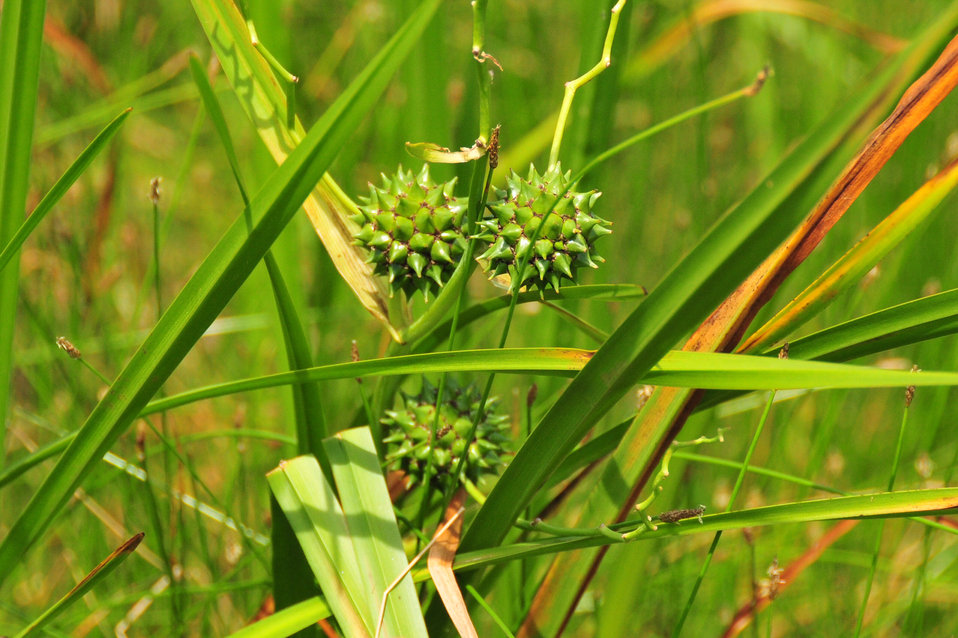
Bur-reed (Sparganium eurycarpum) Sand Lake Wetland Management District 01

Bur-reed (Sparganium eurycarpum) grows in temporarily and seasonally flooded wetlands throughout the Prairie Pothole Region. It is a clonal perennial, spreading by below-ground rhizomes. The common name, bur-reed, arises from the distinctive round clusters of fruits. These seed heads shatter in the fall into individual kernels nearly the size of corn kernels. The seeds can accumulate in the soil as buried reserves and provide a very attractive food source for mallards and other waterfowl. This species frequently occurs in areas with spring flooding, and may be found in drying wetlands during periods of lower water. The buried rhizomes provide one method to survive periods of drought, fire, or ice scour. Leaves may be confused with cattail but is differentiated by the sharp mid rib on one side which cattail does not have. It can form dense stands under the right conditions. Muskrats feed heavily on the stems and rhizomes and their populations may increase when bur-reed is abundant.